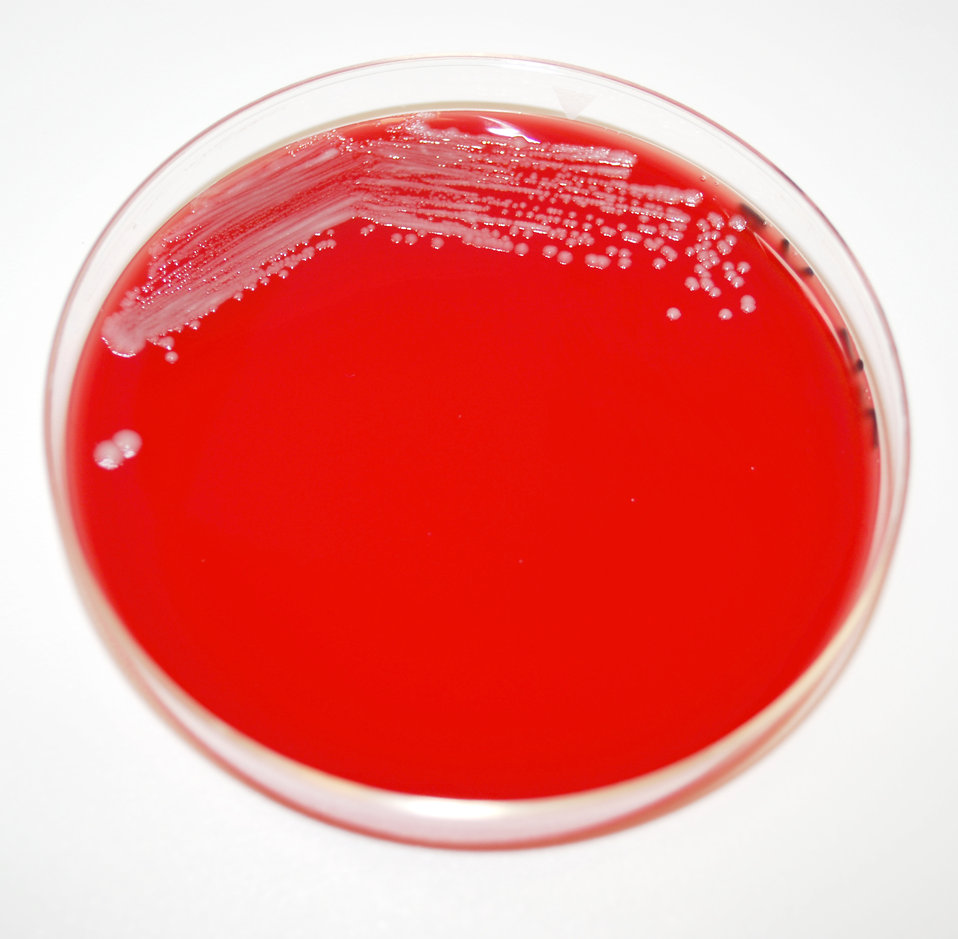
This image depicts a Petri dish containing a sheep's blood agar (SBA) medium, which had been inoculated with Gram-negative Yersinia pestis bacteria. Y. pestis is the pathogen responsible for causing human plague. This was the appearance of the colonial growth after 72 hours of incubation at 25� C.